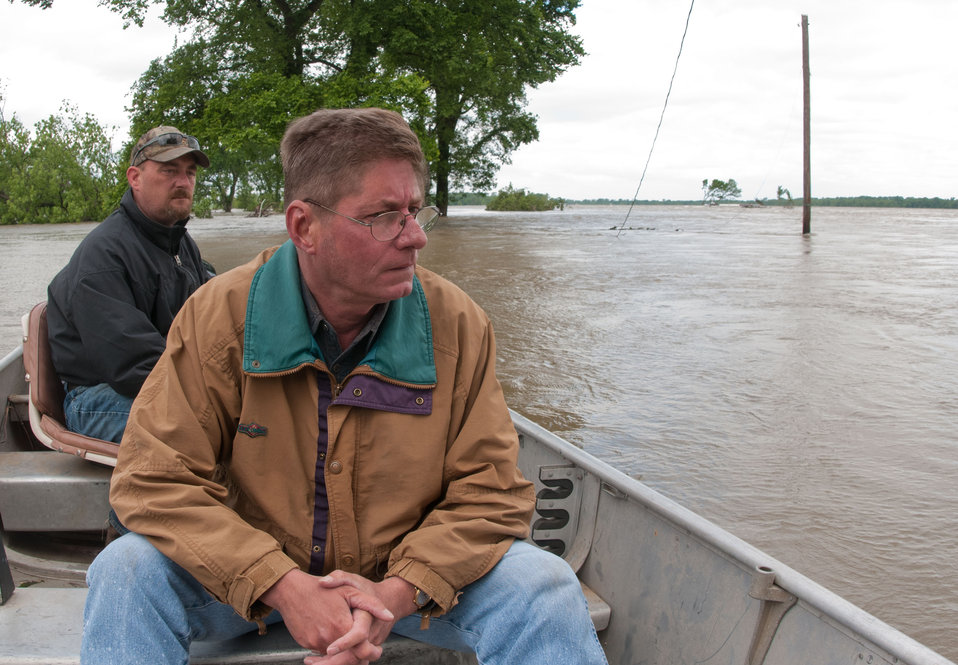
Joe Higdon and Lee Tacito look over a portion of President's Island, inundated by fast flowing floodwaters of the Mississippi River near Memphis, TN, on Sunday, May 15. 2011.